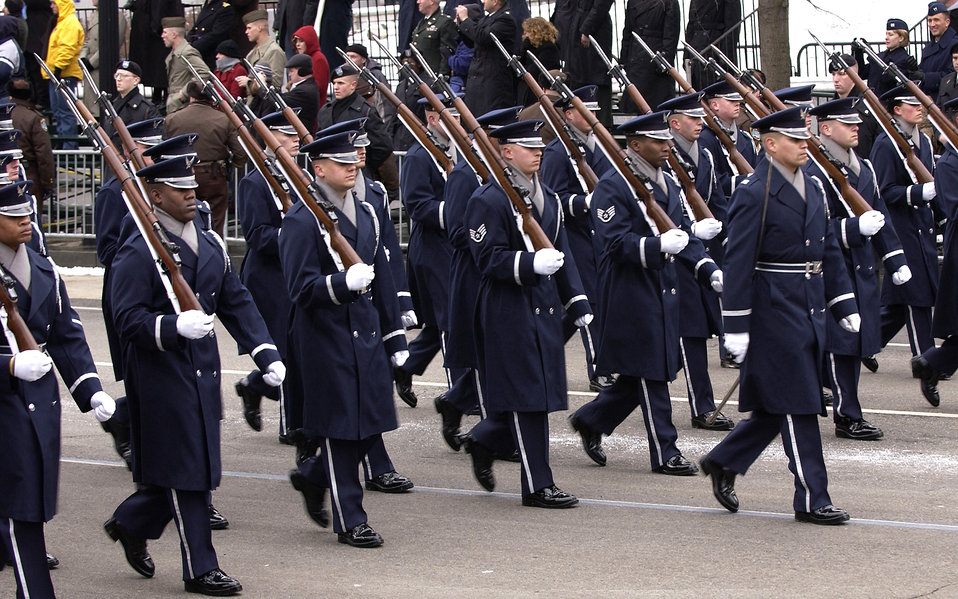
Airmen march in inaugural parade

WASHINGTON -- The U.S. Air Force Honor Guard marches in the Presidential Inaugural Parade here Jan. 20. Joint Task Force-Armed Forces Inaugural Committee officials are responsible for coordinating all military ceremonial support for the inauguration. Support included musical units, marching units, color guards, firing details and salute batteries.